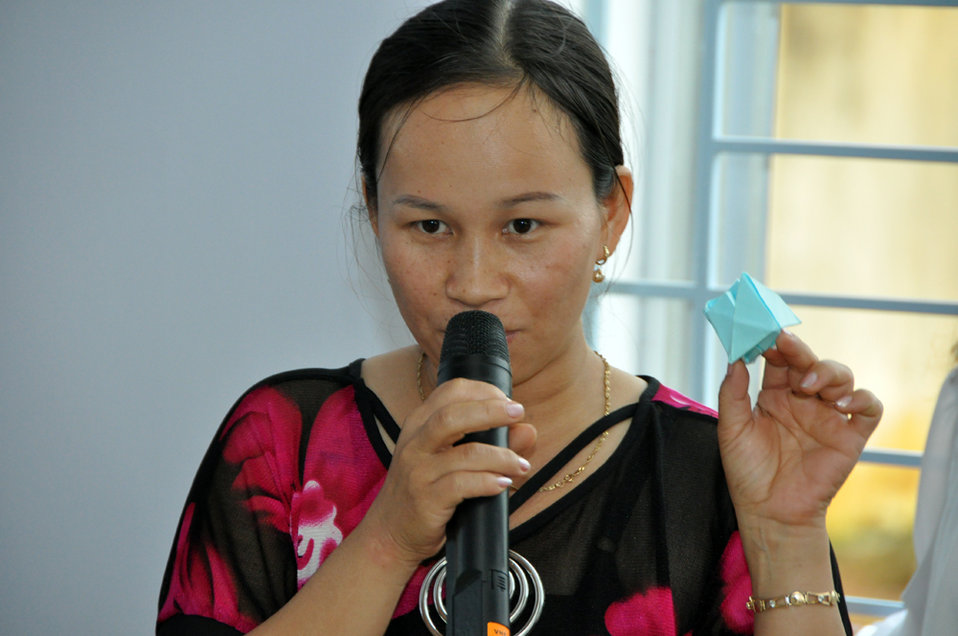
USAID contributes to refurbished pre-schools and teacher training in Vietnam